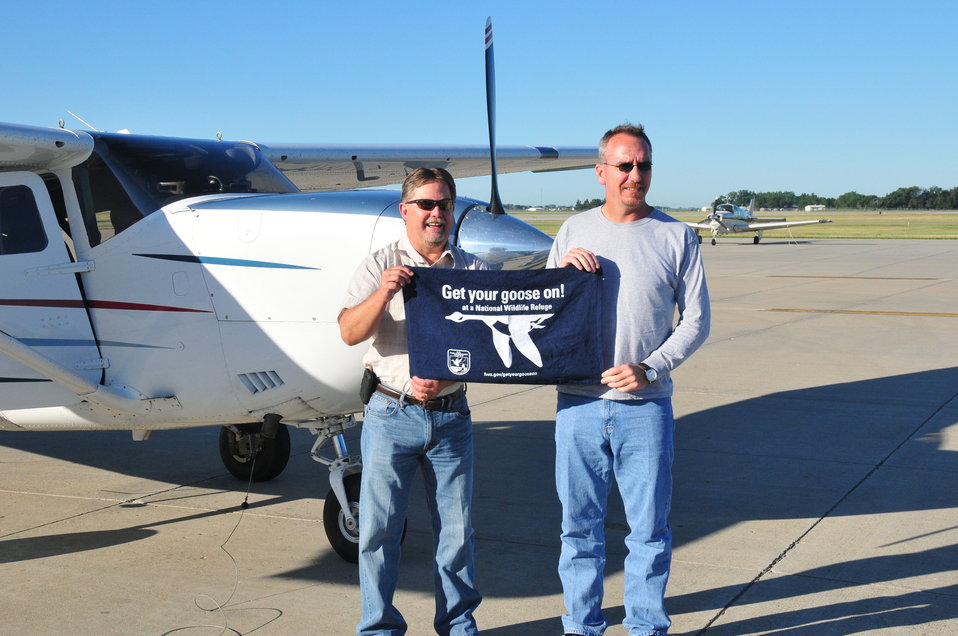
Get Your Goose On!

The national meeting for regional chiefs of the National Wildlife Refuge System is held three times a year in different locations around the country. This 2012 meeting took place in McPherson County, South Dakota, and focused on the Dakota Grassland Conservation Area.

This photo was taken on the Wade Weiszharr and Family Ranch, which contains perpetual U.S. Fish and Widlife grassland and wetland easements. This site is also located in the heart of Prairie Pothole Region, making it extremely productive migratory bird habitat and a great place to “Get your goose on!”

Here Aaron Archibeque and Jeff Ruppert 'get their goose on' next to the region's Cessna 206! This aircraft is primarily used to monitor grassland and wetland easements in the area.